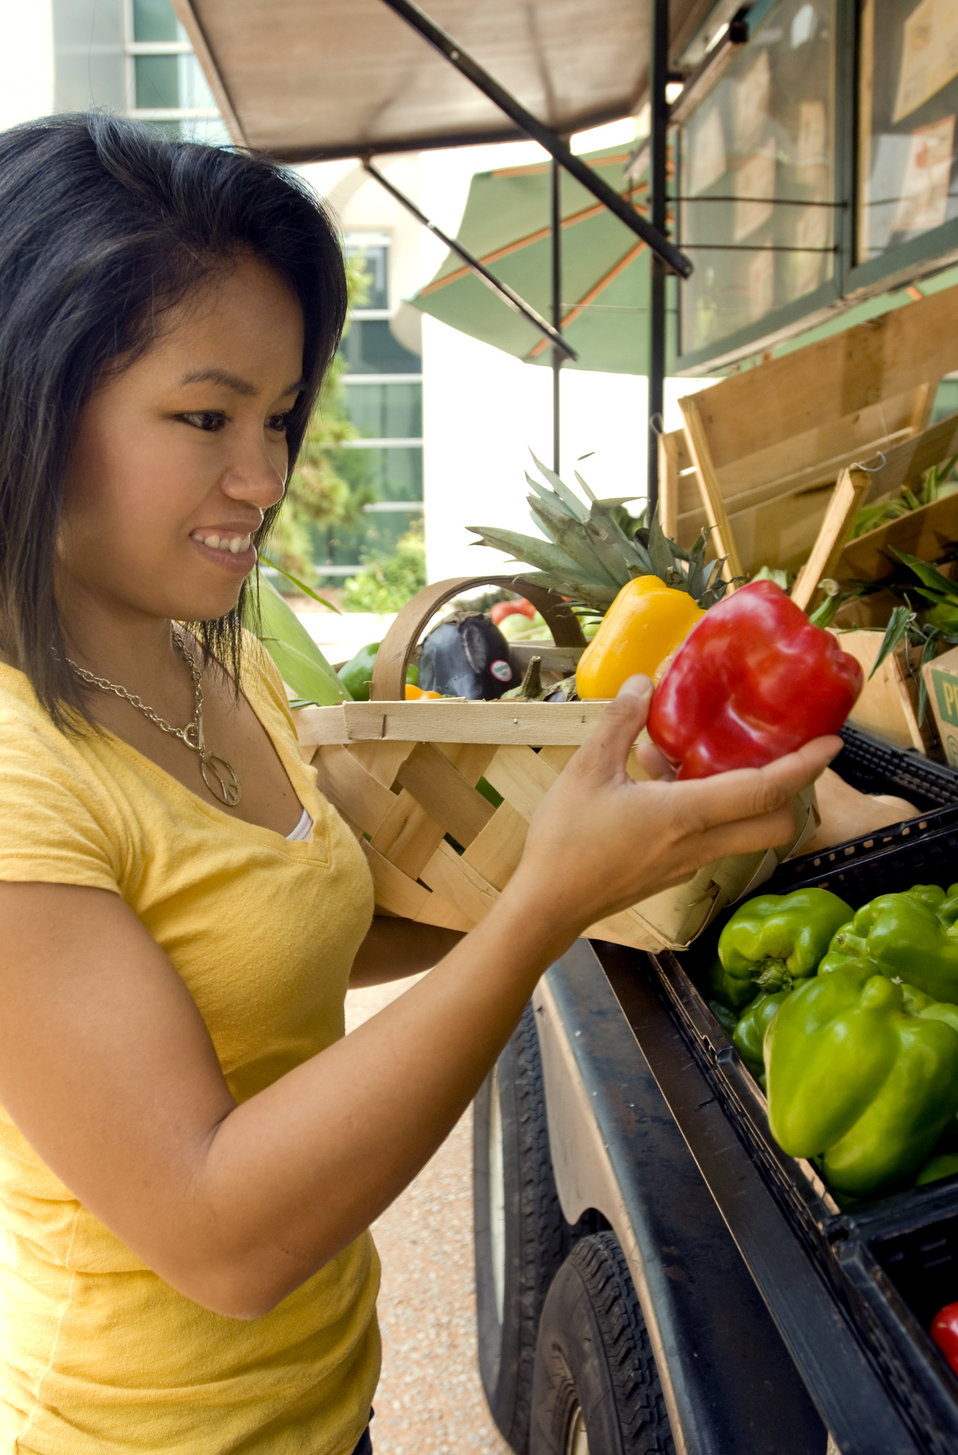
This photograph depicts a woman shopping at a mobile produce market, making healthy food choices from an array of fresh fruits and vegetables. After having made her choices, she had placed her selections into a woven wooden basket, which she'd propped up behind her, onto the edge of the market trailer. In this particular view, she was inspecting a bright red bell pepper as a possible additional purchase. Note some of the foods that were available at this mobile produce facility.